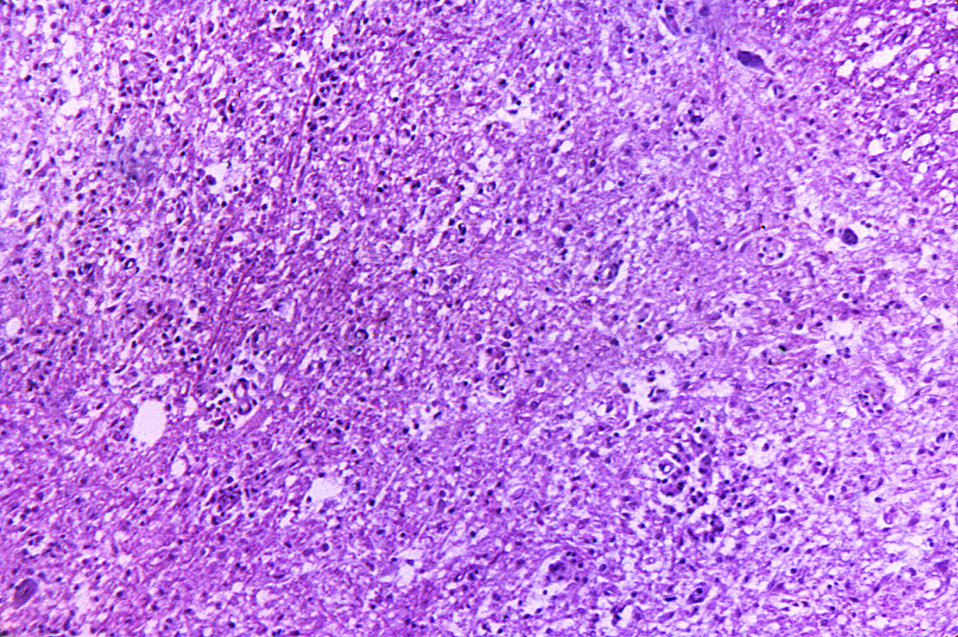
Photomicrograph of the Cervical Spinal Cord Affected by Polio Type III Virus